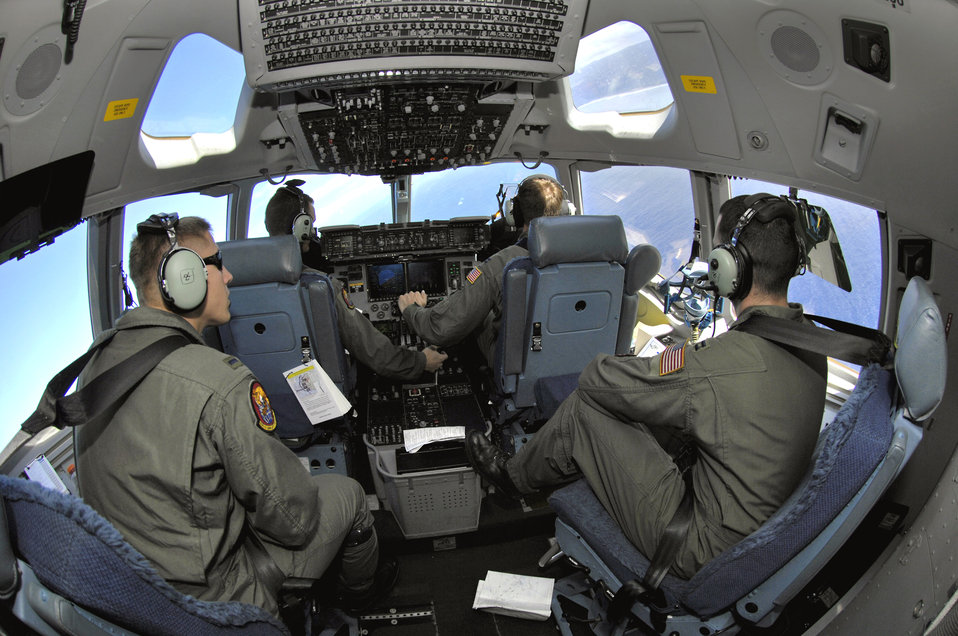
Global presence

Pilots from the 535th Airlift Squadron from Hickam Air Force Base, Hawaii, fly their C-17 Globemaster III during a local training mission Jan. 19, 2007 over the Hawaiian Islands. In February 2006, Hickam AFB received its first C-17.